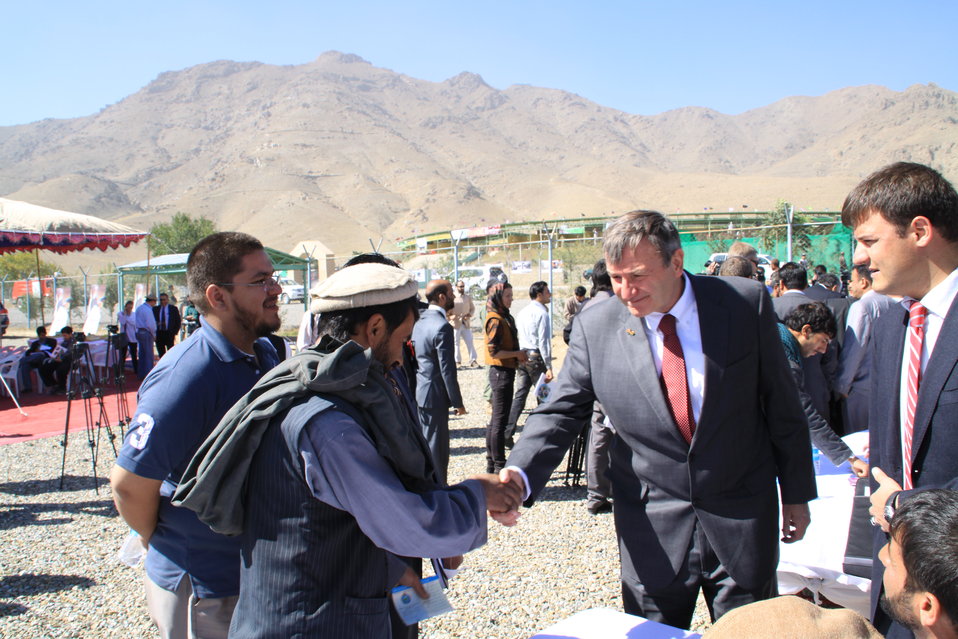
Afghan Farmers Break Ground, Sow Seeds in AVIPA's 2010 Wheat Seed Distribution Launch

Kabul, Afghanistan | October 5, 2010 – Local Afghan farmers lined up in the early morning hours to partake in the 2010 national wheat seed distribution, provided by the USAID-funded Afghanistan Vouchers for Increased Production in Agriculture (AVIPA) program.

Local farmers received vouchers entitling them to significant discounts on and access to certified wheat seed and fertilizer in an effort to improve the quality and production of Afghanistan’s wheat. At Monday’s distribution, farmers submitted their vouchers and provided their 35% co-payment to receive wheat seed and fertilizer. They are the first of 260,000 farmers throughout 31 provinces who will receive similar support for the winter wheat planting season.

U.S. Ambassador to Afghanistan, Karl W. Eikenberry, attended today’s wheat distribution, taking the opportunity to speak with farmers about their hopes for an increased wheat harvest this coming year.

“I am delighted to witness today’s wheat seed distribution. The US Government, along with our implementing partners, is committed to help improve Afghanistan’s wheat production by improving the quality. Wheat is an important part of the Afghan diet, and we want to help the Ministry of Agriculture, Irrigation and Livestock reach out to rural wheat farmers, who produce the vast majority of wheat in Afghanistan, and provide them with good quality seed and provide technical assistance that can increase yields. Our agricultural vouchers program, AVIPA, is aimed at providing local farmers the opportunities to revitalize their productive capacity and to reinvigorate the market place,” commented Ambassador Eikenberry.

To date, AVIPA, and its successor program AVIPA-Plus, have distributed agriculture voucher packages to more than 700,000 farmers, totaling 12,000 tons of improved wheat seed, and 55,000 tons of fertilizer throughout 20 provinces since 2009.

As an alternative to direct food handouts, AVIPA and AVIPA-Plus aim to strengthen sustainable livelihoods by providing agricultural inputs, such as wheat and fertilizer, to local farmers at an affordable cost. The farmers can then promote and support local production, community decision-making, and farmer-supplier relationships. USAID, and its implementing partner International Relief and Development, Inc. (IRD), worked closely with the Ministry of Agriculture, Irrigation, and Livestock to design this community-based approach to seed and fertilizer distribution.